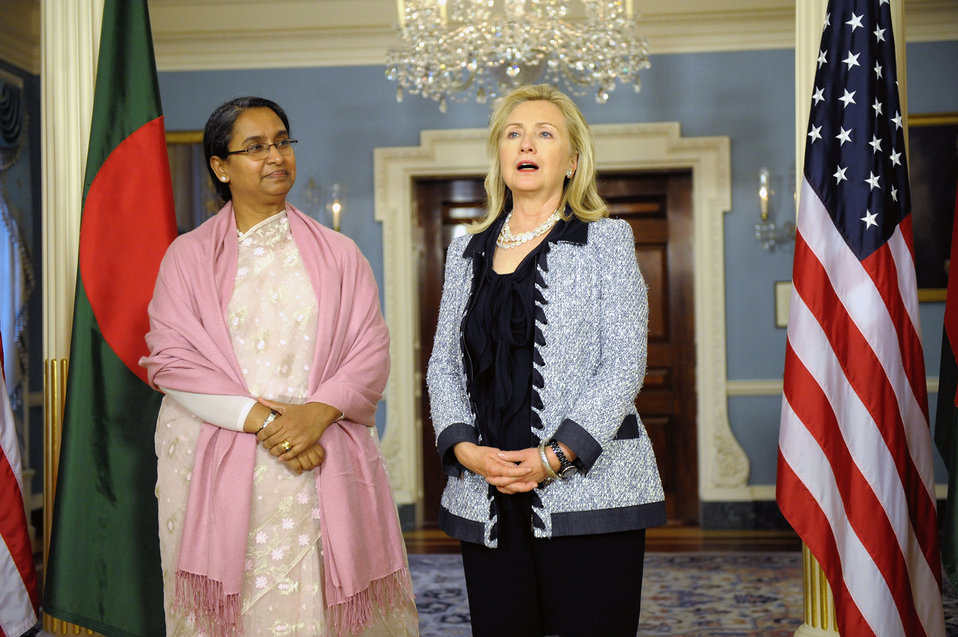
Secertary Clinton Meets With Bangladeshi Foreign Minister Dipu Moni

U.S. Secretary of State Hillary Rodham Clinton meets with Bangladeshi Foreign Minister Dipu Moni at the U.S. Department of State in Washington, D.C., on October 12, 2011.